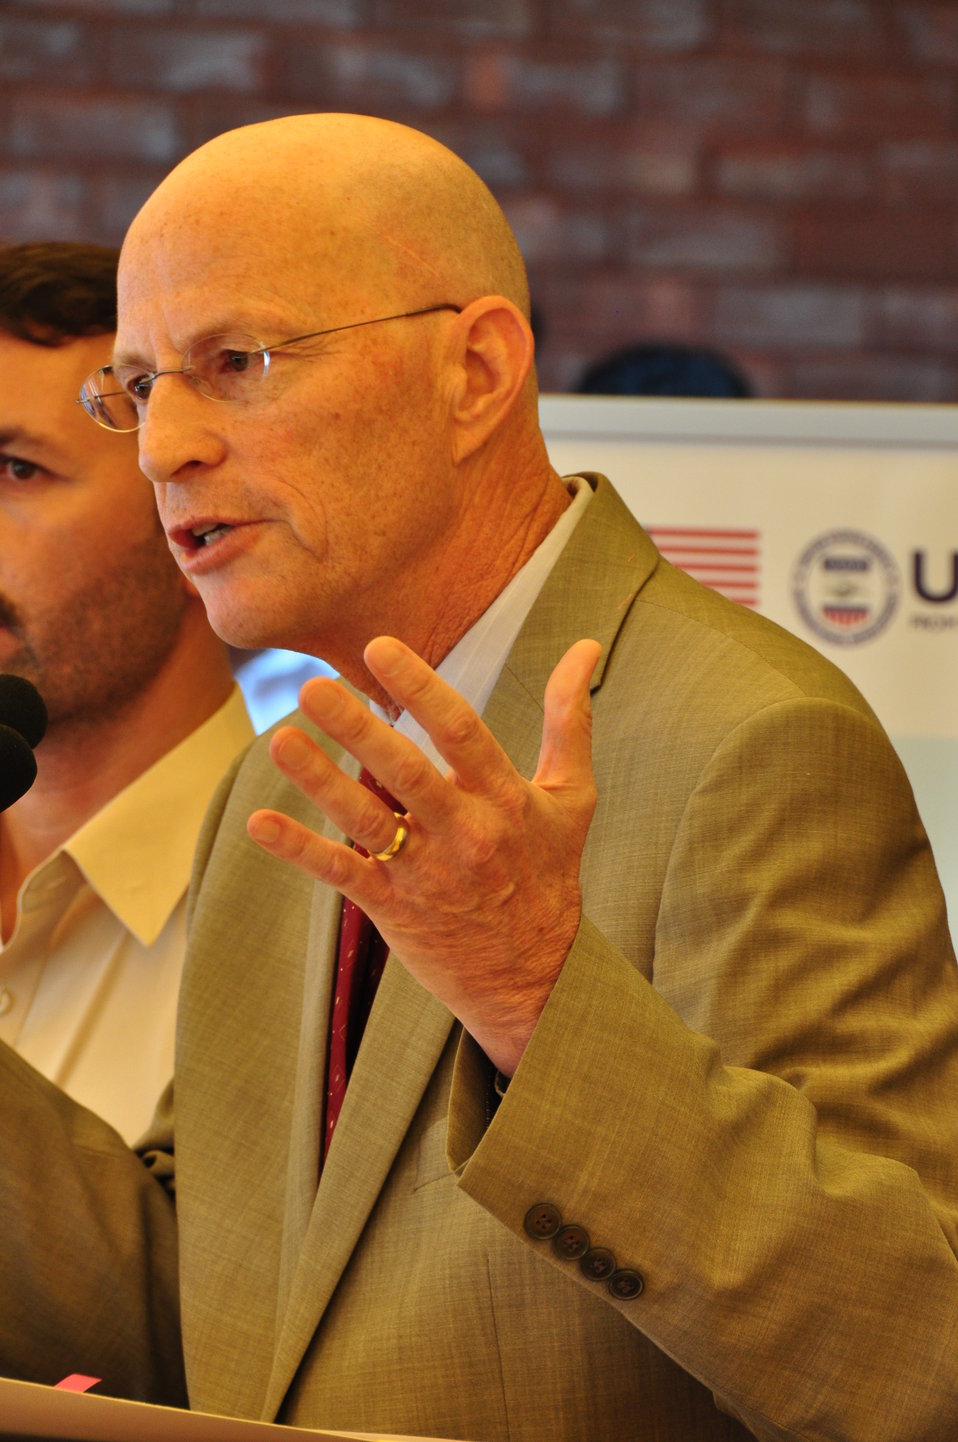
Dhirkot Reconstructed Hospital Inauguration Pakistan Reconstruction Program 05